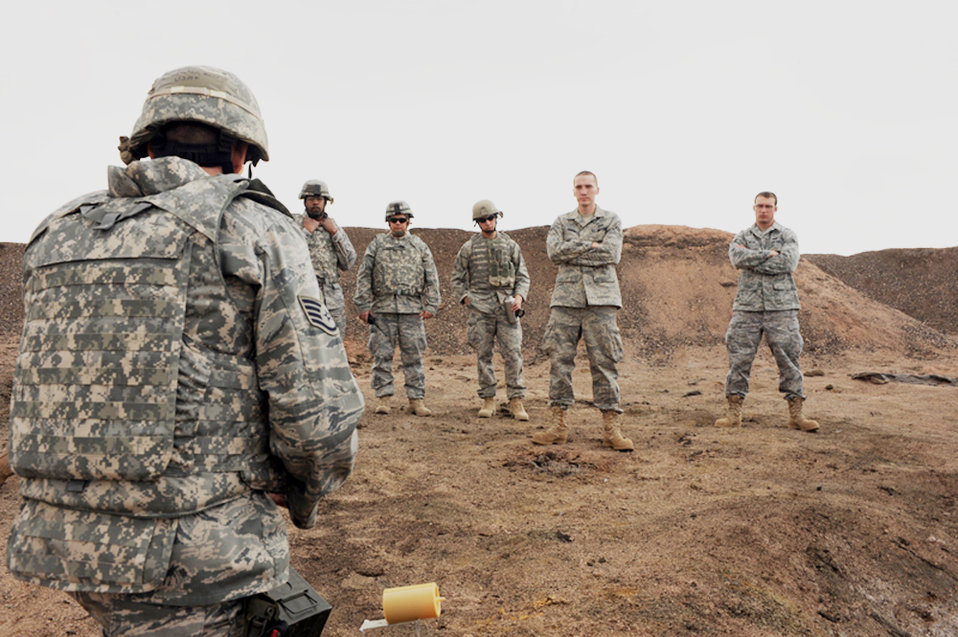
EOD team charge an explosion

In a training session, Staff Sgt. Darryl Wilcken, an explosive ordnance disposal journeyman with the 28th Civil Engineer Squadron, explains the significance of explosive rods March 30, 2010, at Ellsworth Air Force Base, S.D.